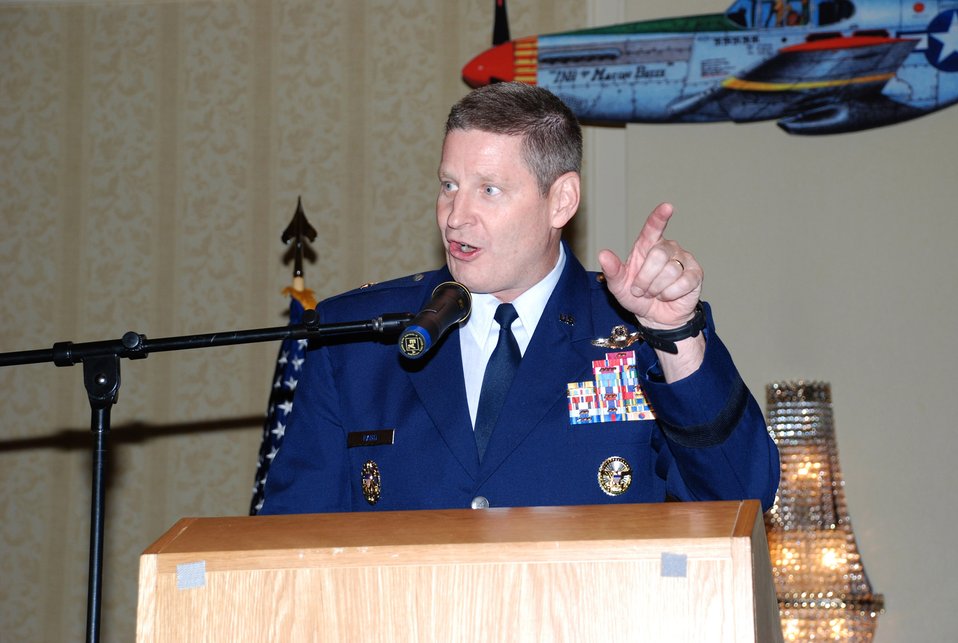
Servicemembers honored at Tuskegee Airmen convention

Brig. Gen. Robin Rand speaks at a military luncheon during the 37th Annual Tuskegee Airmen National Convention July 18 in Philadelphia. The luncheon honored Tuskegee Airmen and those currently serving, and featured a performance by the Air Force Honor Guard drill team. General Rand is the principal director to the deputy assistant secretary of Defense for Middle East policy at the Pentagon.